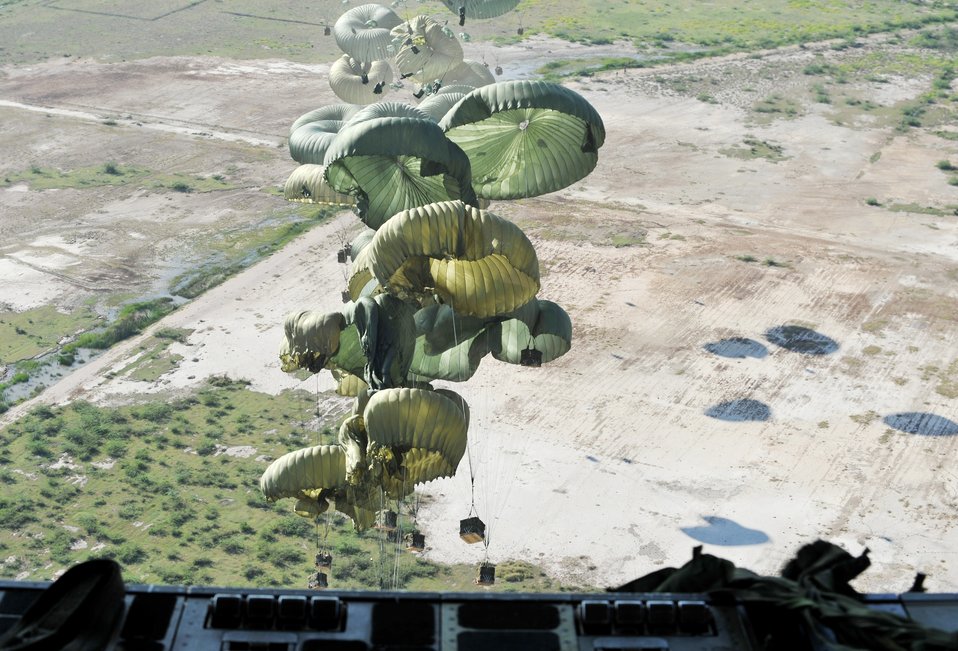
Relief is on the way

Approximately 40 pallets of relief supplies are air delivered from a C-17 Globemaster III over Haiti Jan. 18, 2010. The C-17 crew are Airmen from the 437 Airlift Wing at Charleston Air Force Base, S. C. Relief personnel distributed the supplies on the ground.